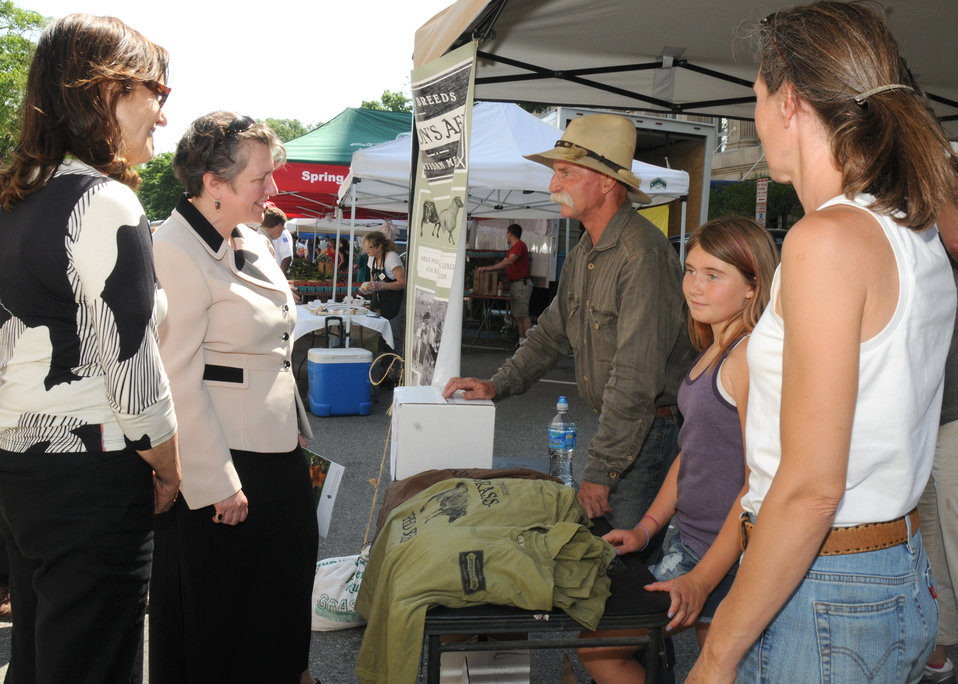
Agriculture Deputy Secretary Kathleen Merrigan wishes a vendor and his family at the Freshfarm Market on Vermont Avenue in Washington, D.C., by the White House good luck on her sales on Thursday, May 6, 2010. USDA photo 10di1348-124.